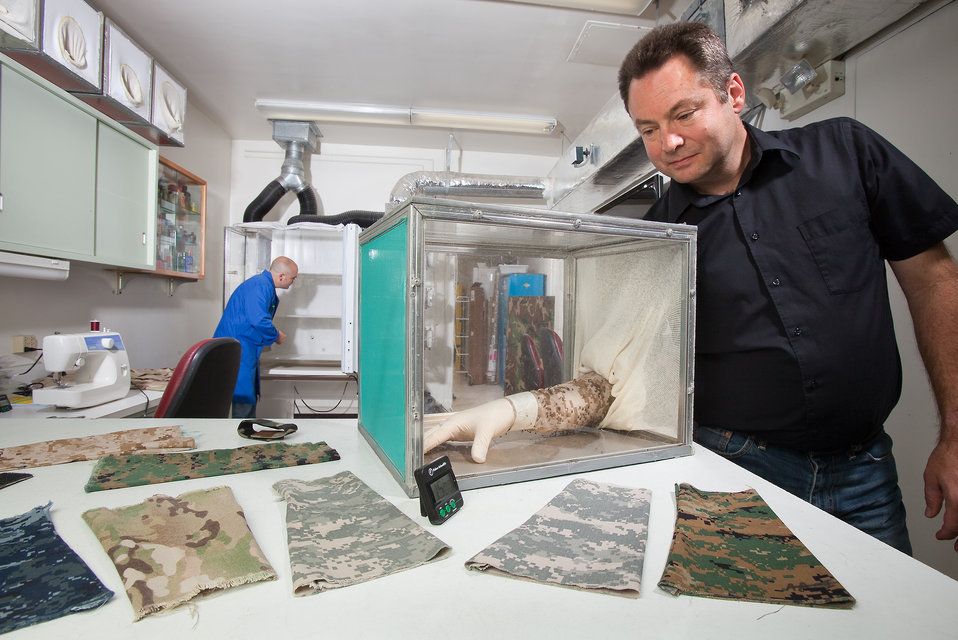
U.S. Department of Agriculture (USDA) Agriculture Research Service (ARS) chemist Ulrich Bernier tests a treated uniform to see whether it prevents mosquitoes from biting in Gainesville, FL on May 23, 2012. The U.S. military treats uniforms with permethrin to prevent mosquitoes and other insects from biting. In the background, USDA ARS technician Greg Allen studies how well mosquitoes are attracted to various test substances.